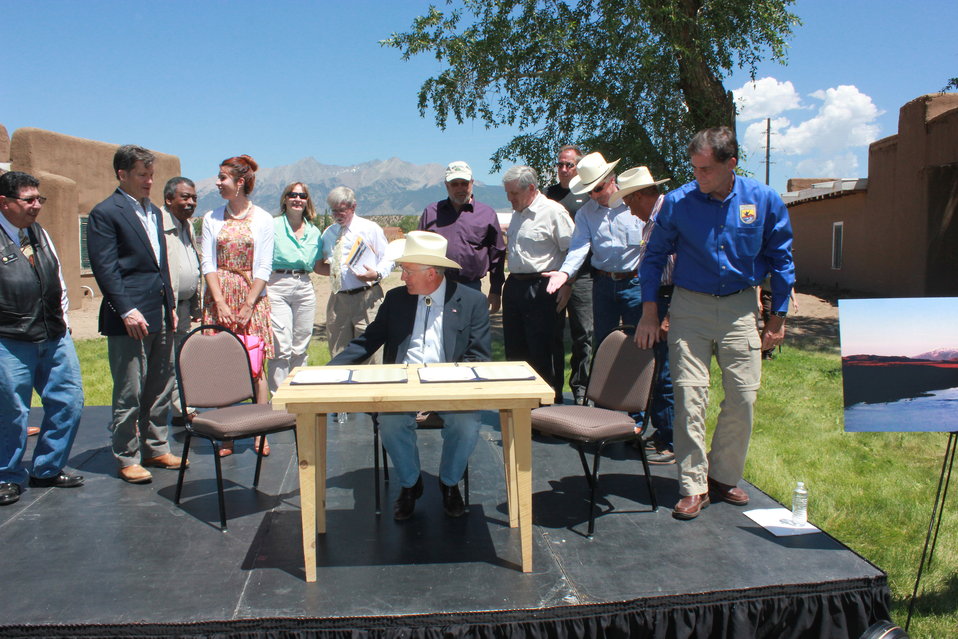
Historic Conservation Easement in Sangre de Cristo Mountains